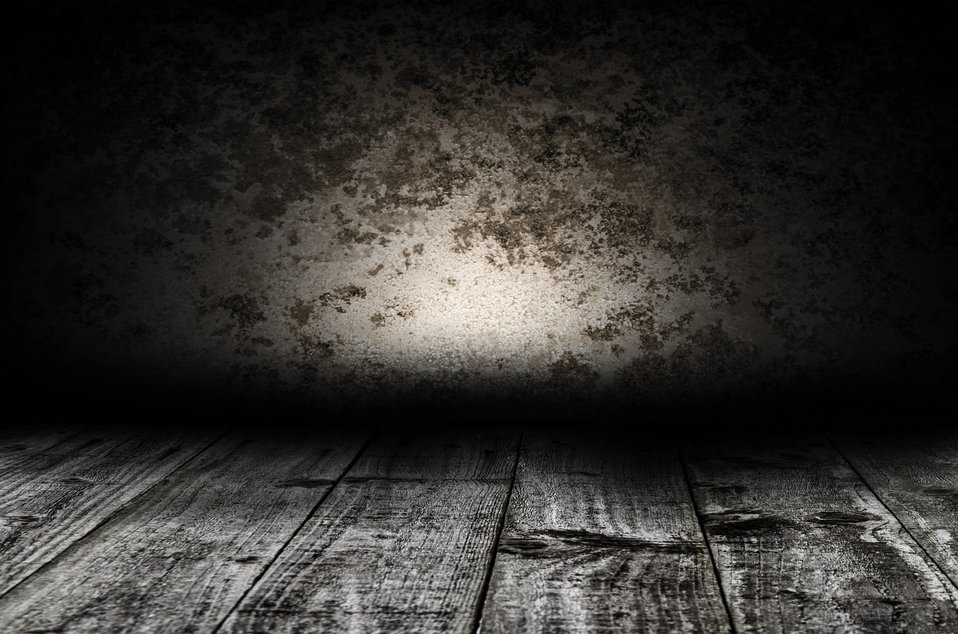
Wooden floor and old wall background.